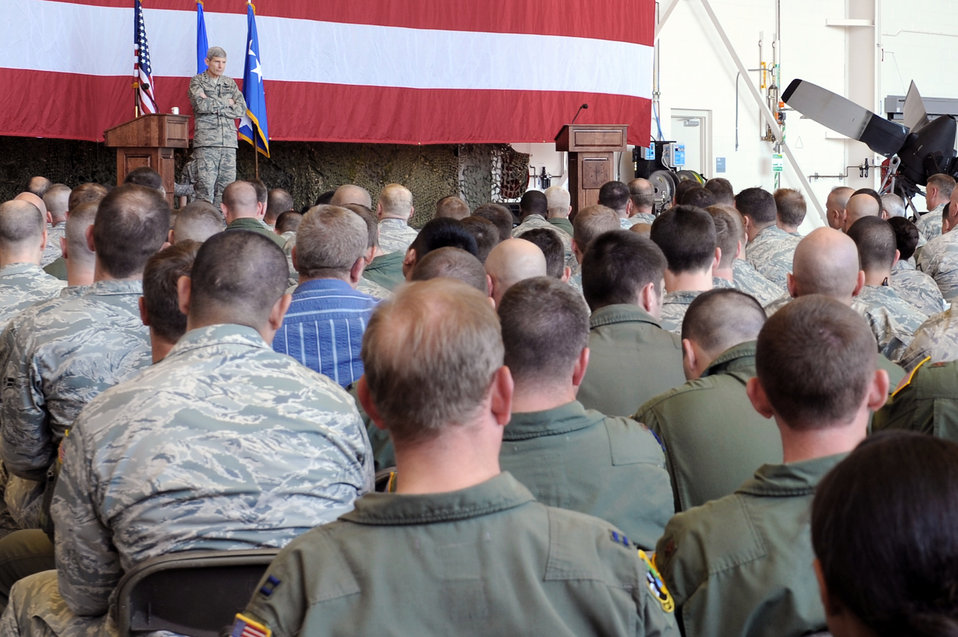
CSAF addresses AF issues, surveys tornado damage at Little Rock AFB

Air Force Chief of Staff Gen. Norton Schwartz answers questions from Airmen May 4, 2011, during an all call at Little Rock Air Force Base, Ark. General Schwartz answered questions regarding a variety of topics, including the current Air Force operations tempo and future deployment outlook.